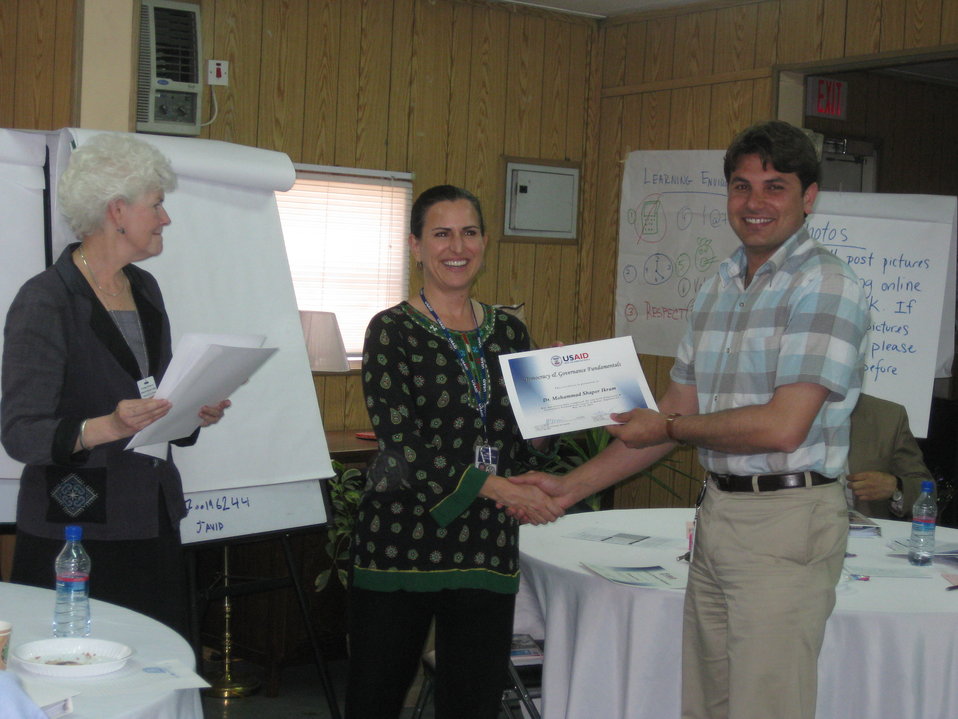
Afghan Youth Voices 068